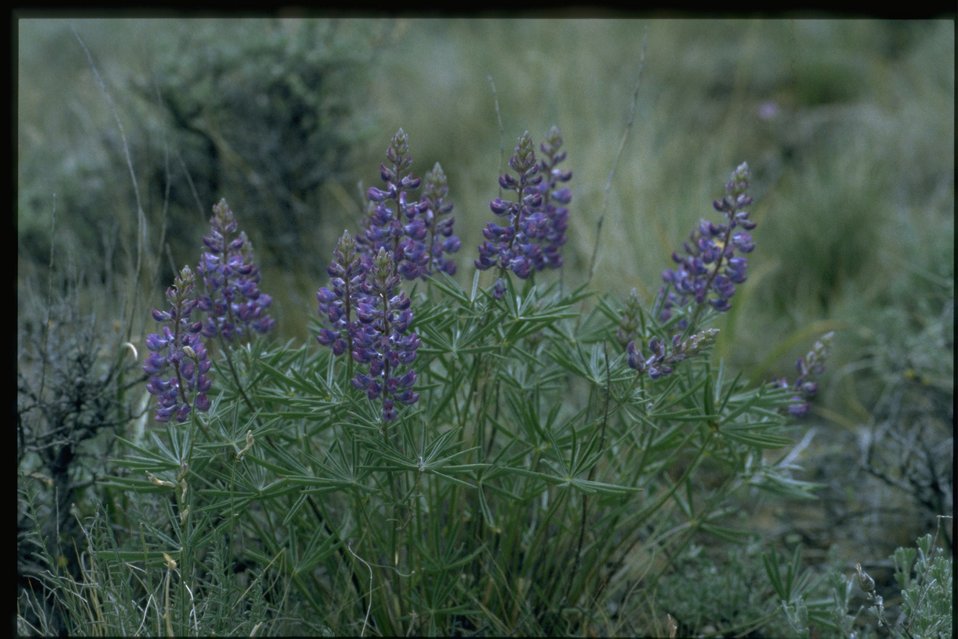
Farshot of tailcup lupine (Lupinus caudatus).